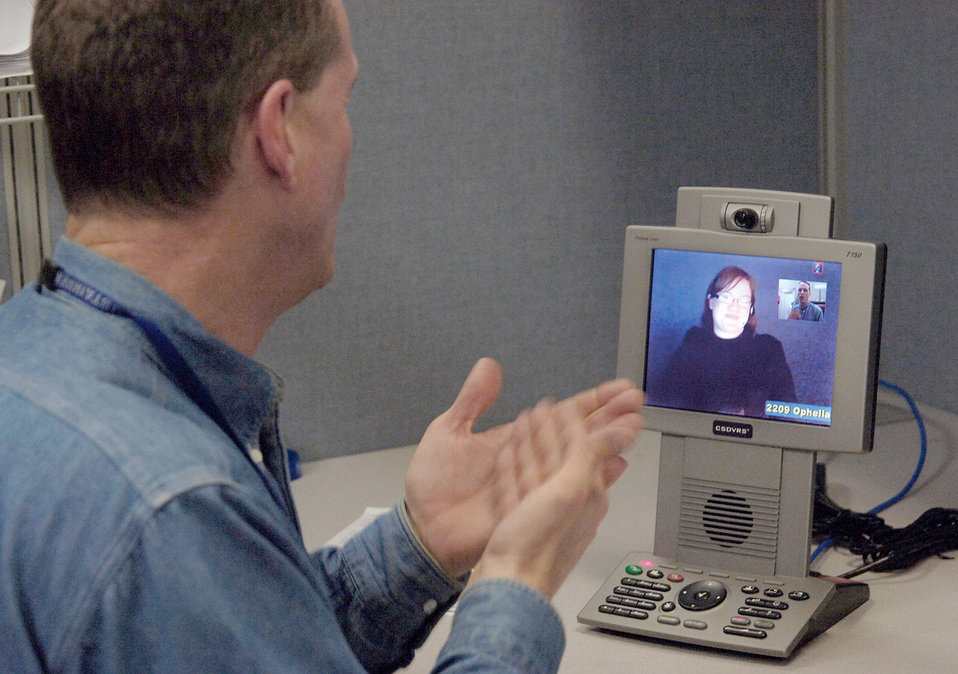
Video Phones for the Hearing Impaired

David Harman communicates by sign language to an interpreter on a new video phone at Tinker Air Force Base, Okla. Mr. Harman is with the 948th Supply Chain Management Group.